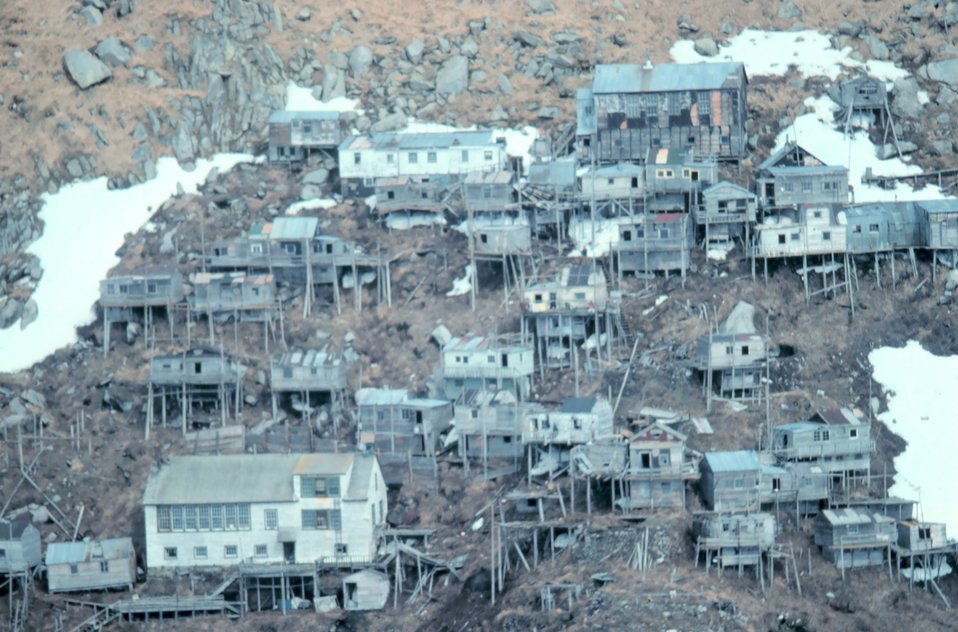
The stilt village of Ukivok - this is now deserted.